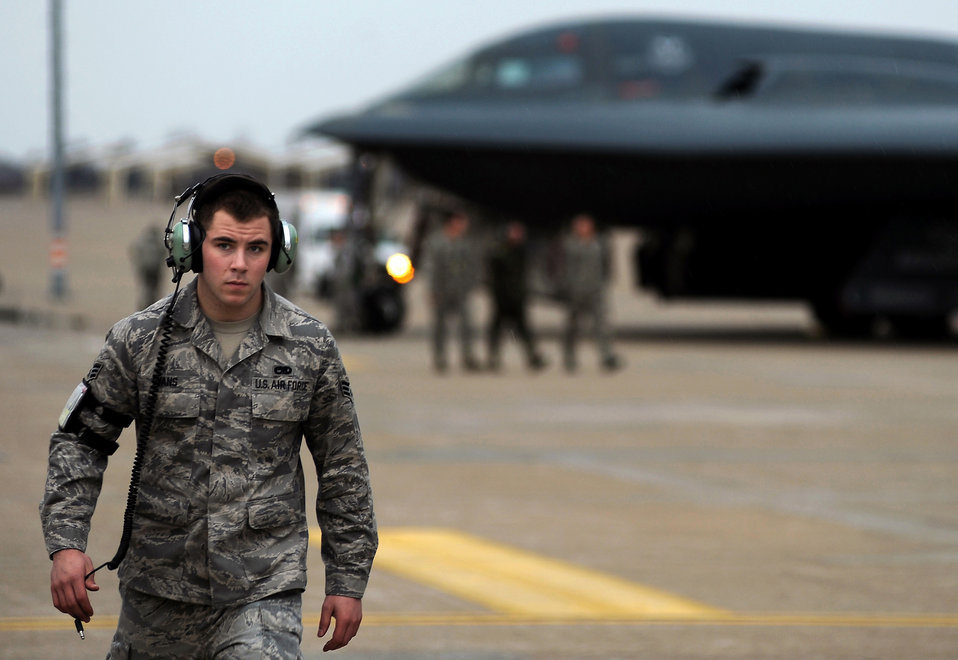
B-2 crews prepare for mission

Maintainers and crew chiefs from the 509th Aircraft Maintenance Squadron at Whiteman Air Force Base, Mo., prepare B-2 Spirits March 19, 2011, for Operation Odyssey Dawn.